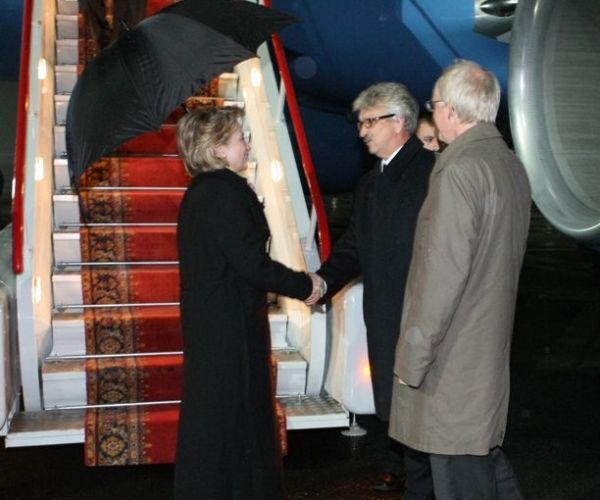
Secretary Clinton With Aleksey Sviridov and U.S. Ambassador John Beyrle

U.S. Secretary of State Hillary Rodham Clinton shakes hands with Aleksey Sviridov, Deputy State Protocol Department of the Russian Ministry of Foreign Affairs, and U.S. Ambassador to Russia John Beyrle in Moscow, Russia, October 12, 2009.